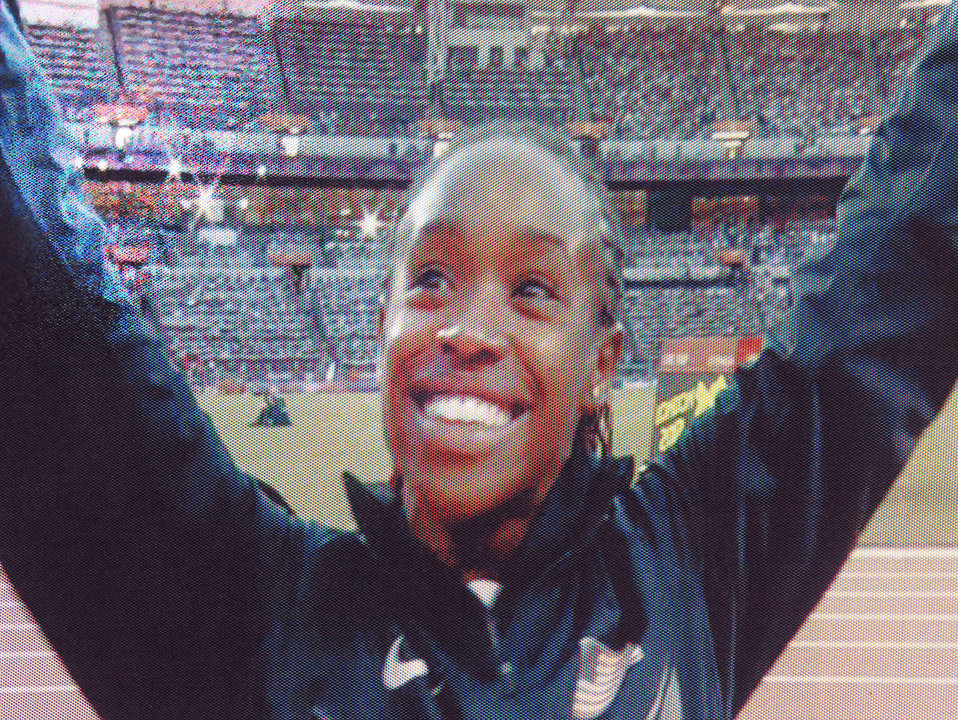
2012 Olympics

Janay DeLoach prepares to make her third long jump Wednesday evening at Olympic Stadium in London. She finished the night with a bronze medal in the event.